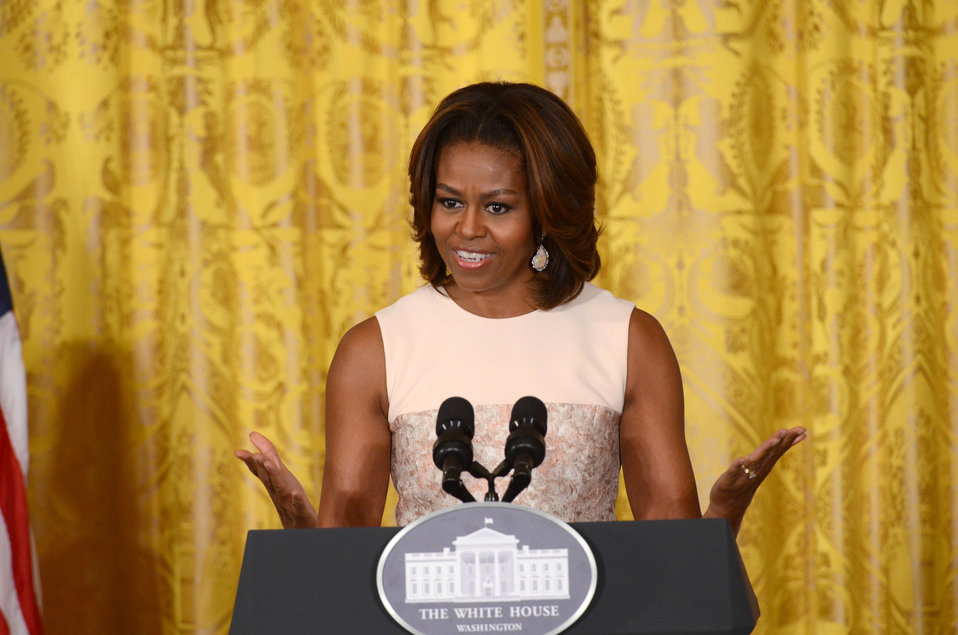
First Lady Michelle Obama announces proposed guidelines for local school wellness policies and roll out of breakfast and lunch programs for schools that serve low-income communities in the East Room of the White House in Washington, D.C. on Tuesday, Feb. 25, 2014. The bipartisan Healthy, Hunger-Free Kids Act of 2010 mandated that the U.S. Department of Agriculture (USDA) set guidelines for what needed to be included in local school wellness policies in areas such as setting goals for nutrition education and physical activity, informing parents about content of the policy and implementation, and periodically assessing progress and sharing updates as appropriate. The proposed guidelines would ensure that foods and beverages marketed to children in schools are consistent with the recently released Smart Snacks in School standards and ensuring that unhealthy food is not marketed to children is one of the First Lady's top priorities. To help schools with the implementation of the school wellness policies, the U.S. Department of Agriculture has launched a new 'School Nutrition Environment and Wellness Resources' website, which includes sample wellness policy language for school districts and a dedicated page of resources for food marketing practices on the school campus.